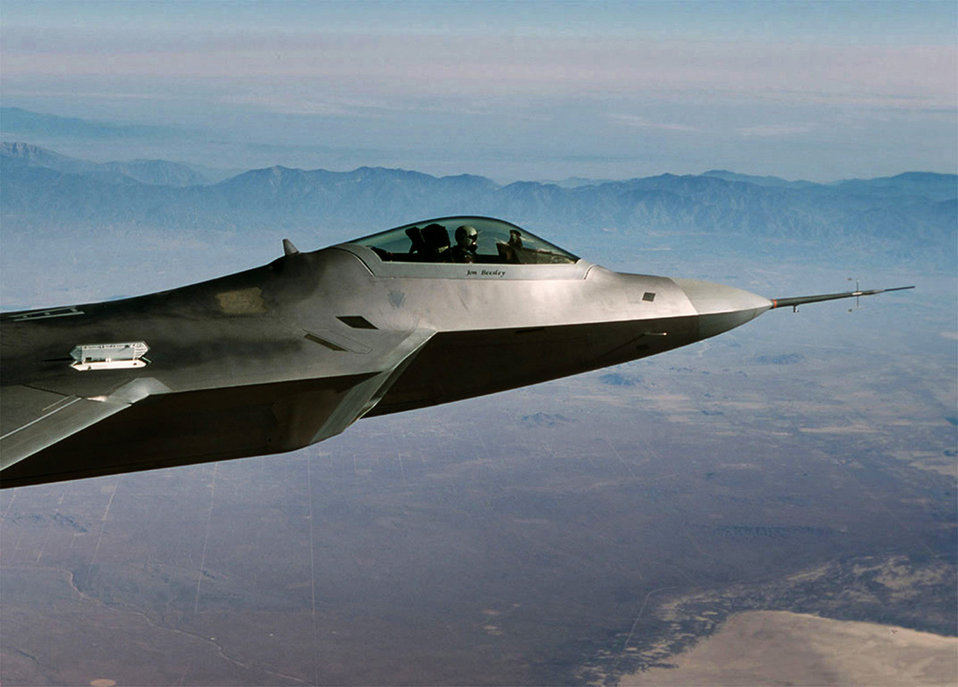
F/A-22 Raptor

FILE PHOTO -- The F/A-22 Raptor's internal-mounted M61A2 six-barreled 20mm lightweight Gatling gun's (upper right wing) hydraulic door was tested during a recent flight test of Raptor 4002 above the Mojave Desert. The successful test was designed to see how the door would react when opened at high speeds. Built by General Dynamics in Burlington, Vt., the gun can fire 6,000 rounds per minute, although the Raptor usually carries only 480 rounds. Almost all current U.S. military fighters and attack jets have been equipped with the M61 or its follow-on models since the 1950s. Consequently, the upgraded gun seems a perfect fit for the next-generation fighter.